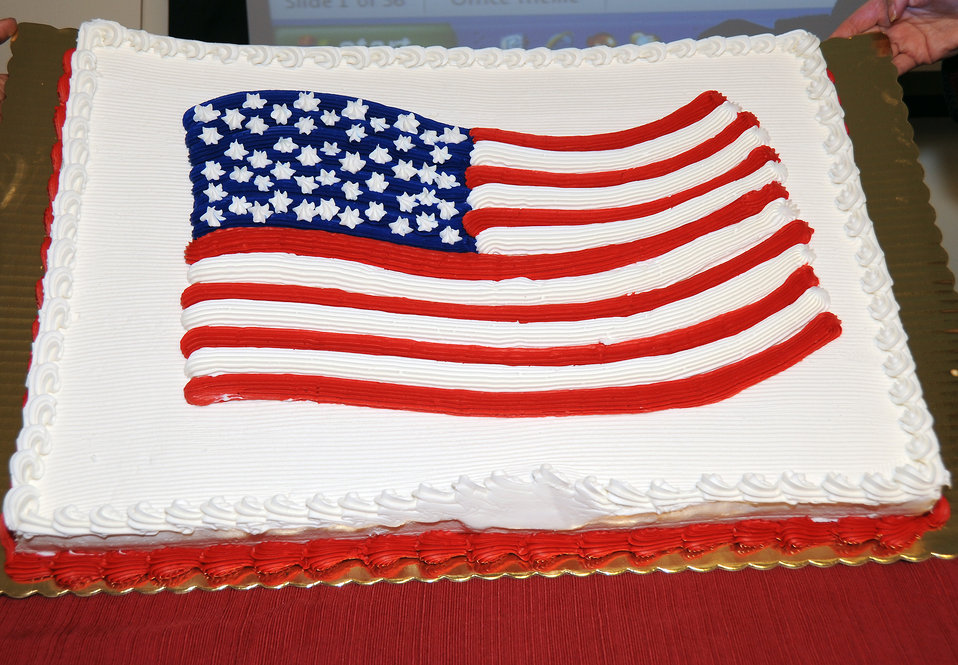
Honoring and Celebrating our Veterans

11.07.2012 Employees gathered in the Arlington Office to honor FWS Veterans